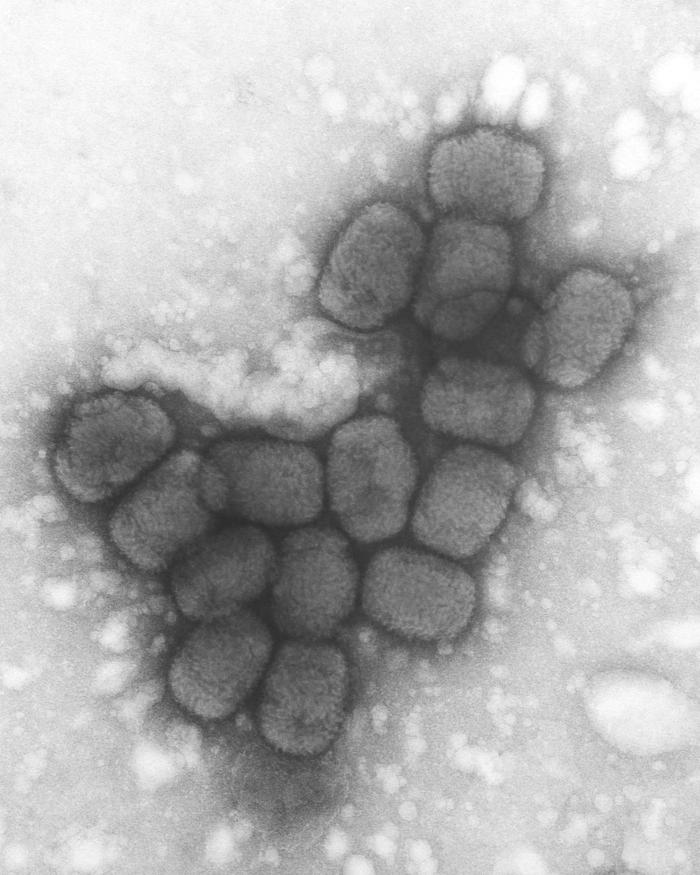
A transmission electron micrograph of smallpox viruses using a negative stain technique. See PHIL 10144 for a colorized version of this black and white image.